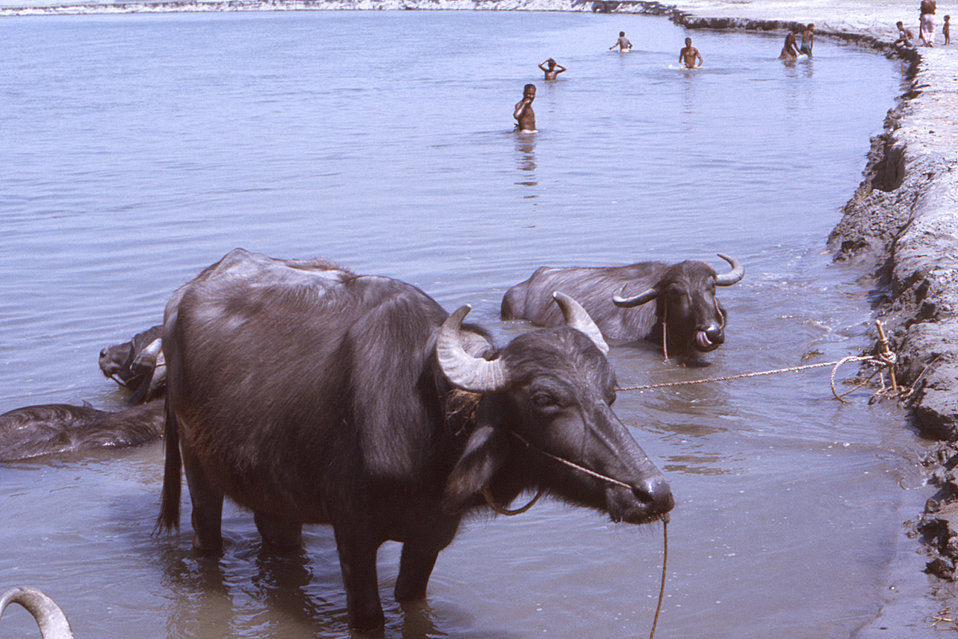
This photograph depicted a number of cattle on the banks of a body of water inside the country of Bangladesh, as well as a number of Bengali villagers taking a respite from the hot weather, as the cattle drank from the water's edge.The image was captured sometime during the worldwide smallpox eradication campaign of the 1970s.The Disease